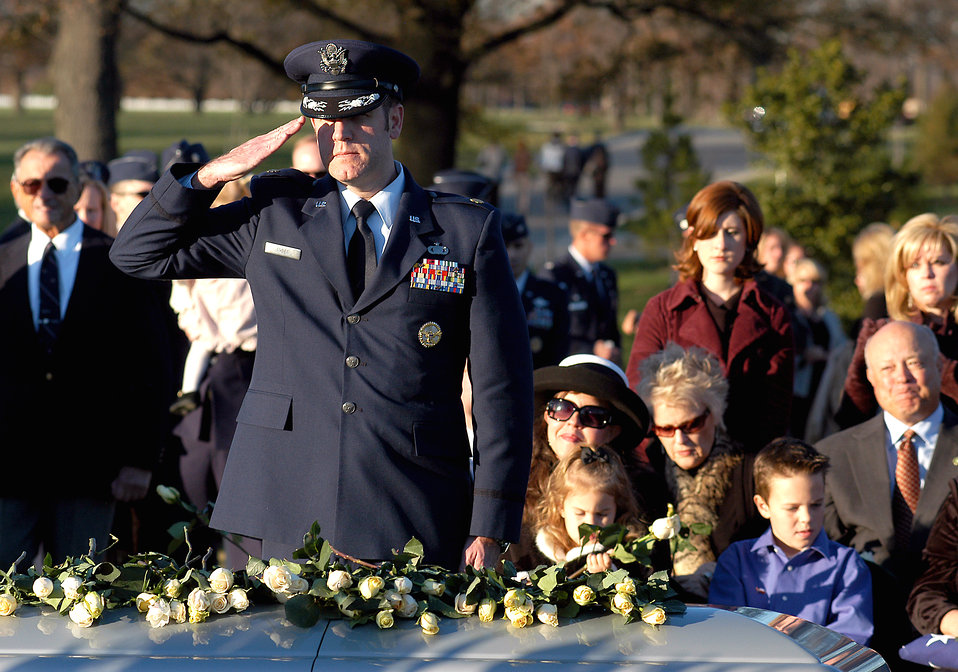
Laid to rest

Maj. Patrick Ryder gives his friend, Maj. Troy Gilbert, a final salute while Ginger Gilbert, looks on Dec. 11 at Arlington National Cemetery. Major Gilbert was laid to rest here during a full honors funeral. A pilot of an Air Force F-16 Fighting Falcon, he engaged in support of coalition ground combat operations that crashed approximately 20 miles northwest of Baghdad Nov. 27. Major Gilbert was assigned to the 309th Fighter Squadron, Luke Air Force Base, Ariz., and was deployed to the 332nd Expeditionary Wing, Balad Air Base, Iraq. Major Ryder is from the Office of Assistant Secretary of Defense for Public Affairs.